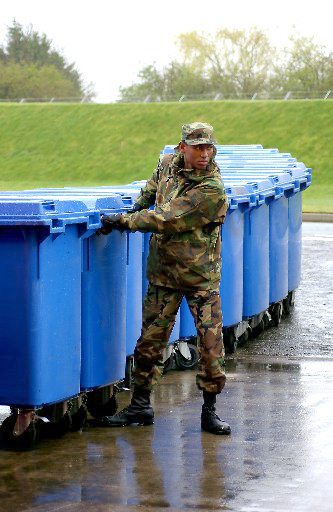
Rolling out the barrels

ROYAL AIR FORCE MILDENHALL, England -- Airman 1st Class DeAngelo Fields moves replacement recycling bins for various locations around base. The recycling center here is expected to process more than 2,400 tons of glass, cardboard, plastic, aluminum, tin and fabrics by the end of 2004. Airman Fields is assigned to the first term Airman center.